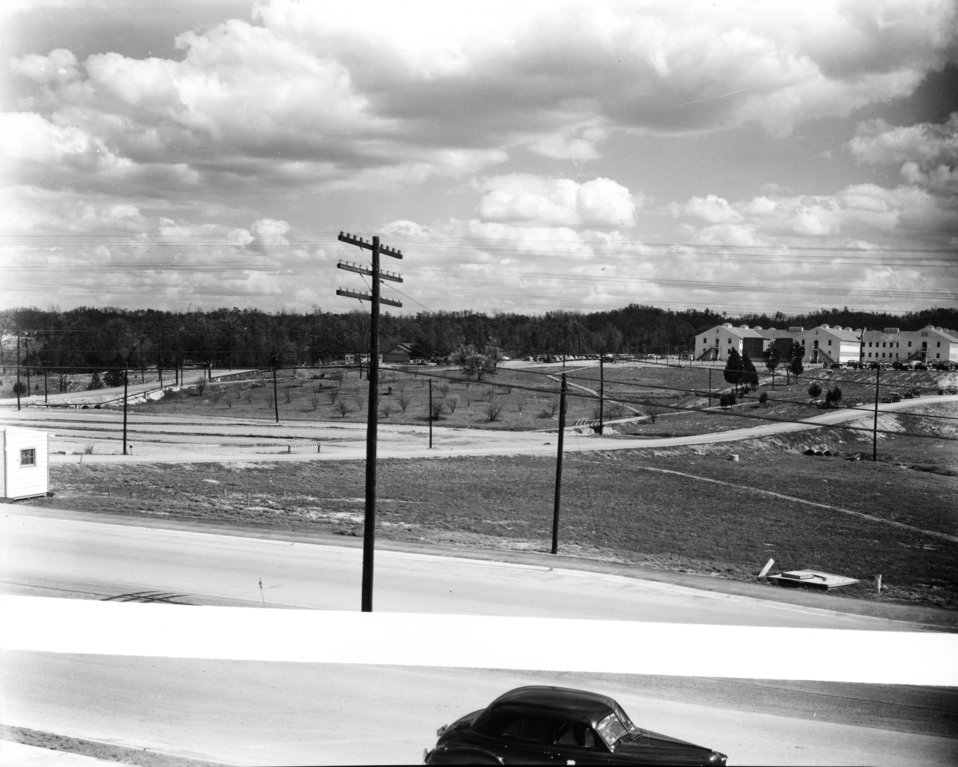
Services at Oak Ridge